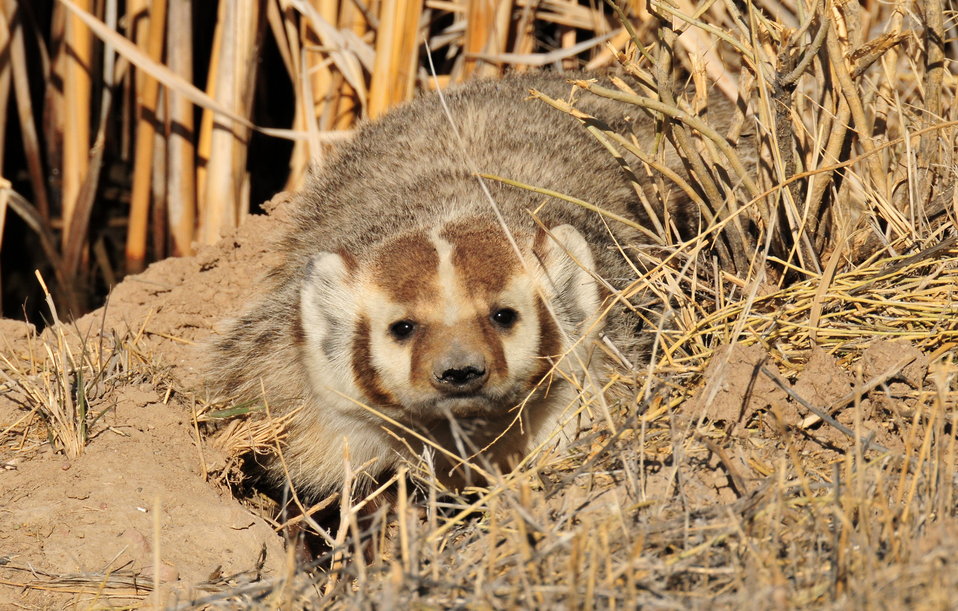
Badger Seedskdaee National Wildlife Refuge 01

A badger observed on Seedskadee NWR Photo: Tom Koerner/USFWS